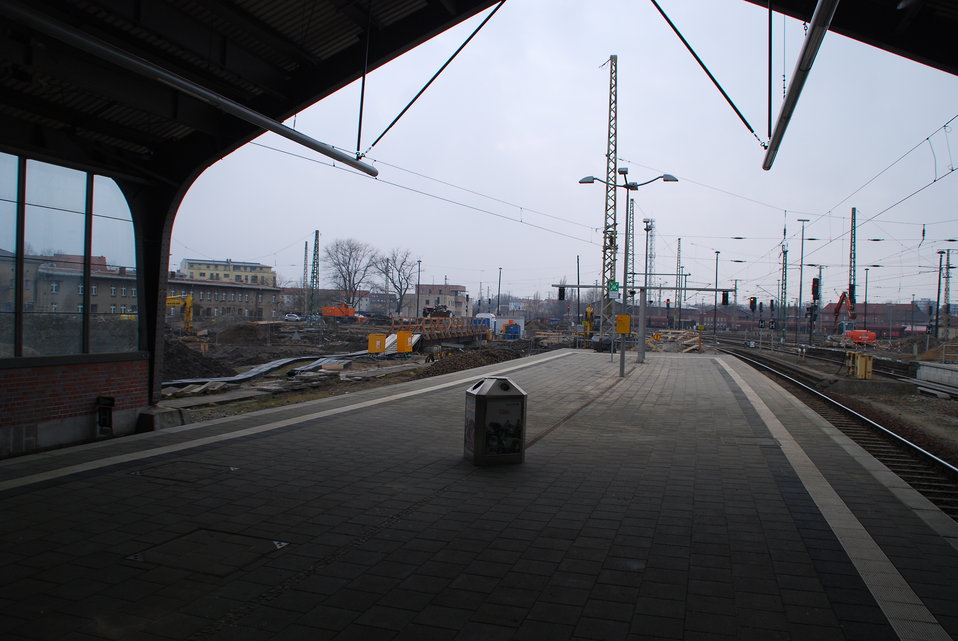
Abriss Bahnhofstunnel Frankfurt (Oder)